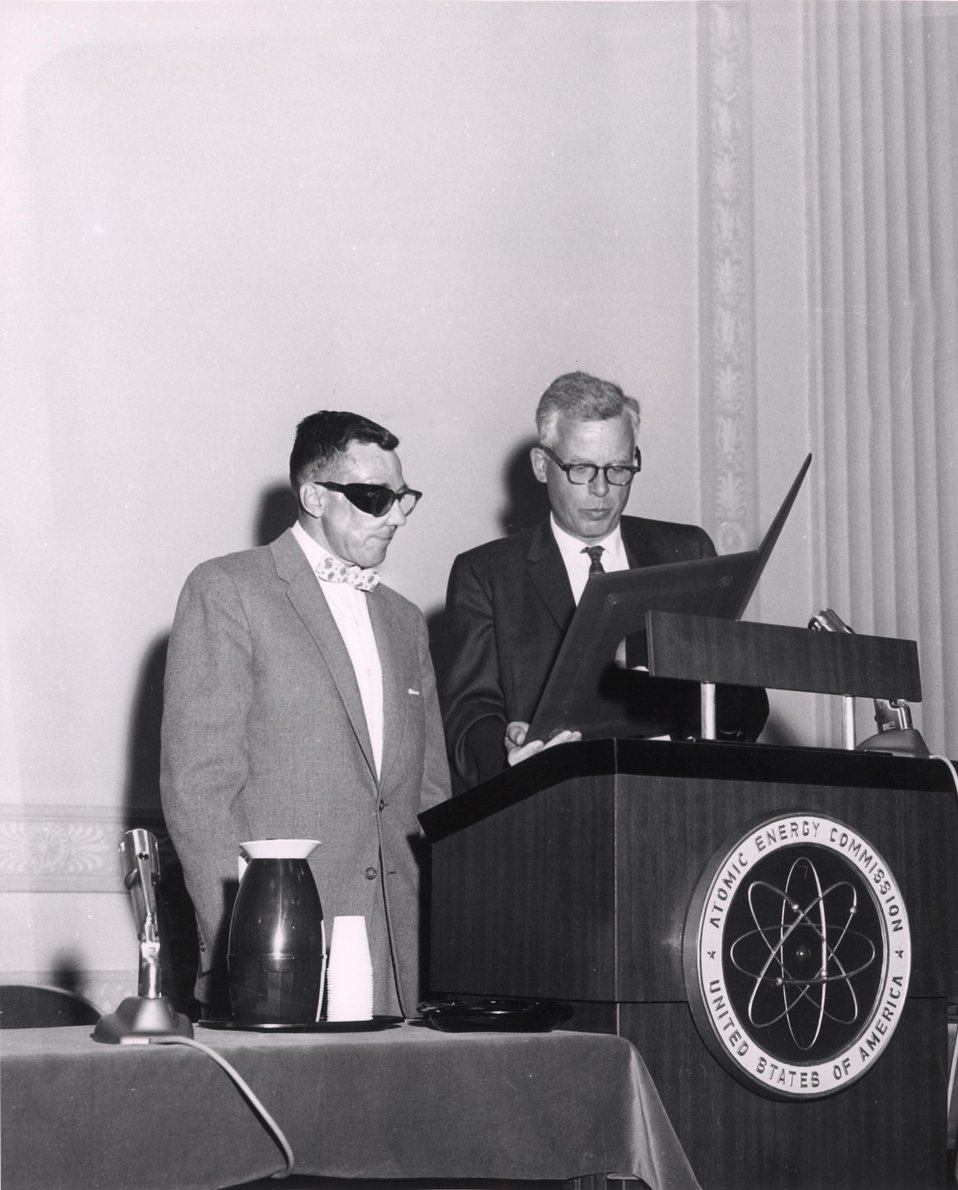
Lawrence Award Ceremony, 1961.